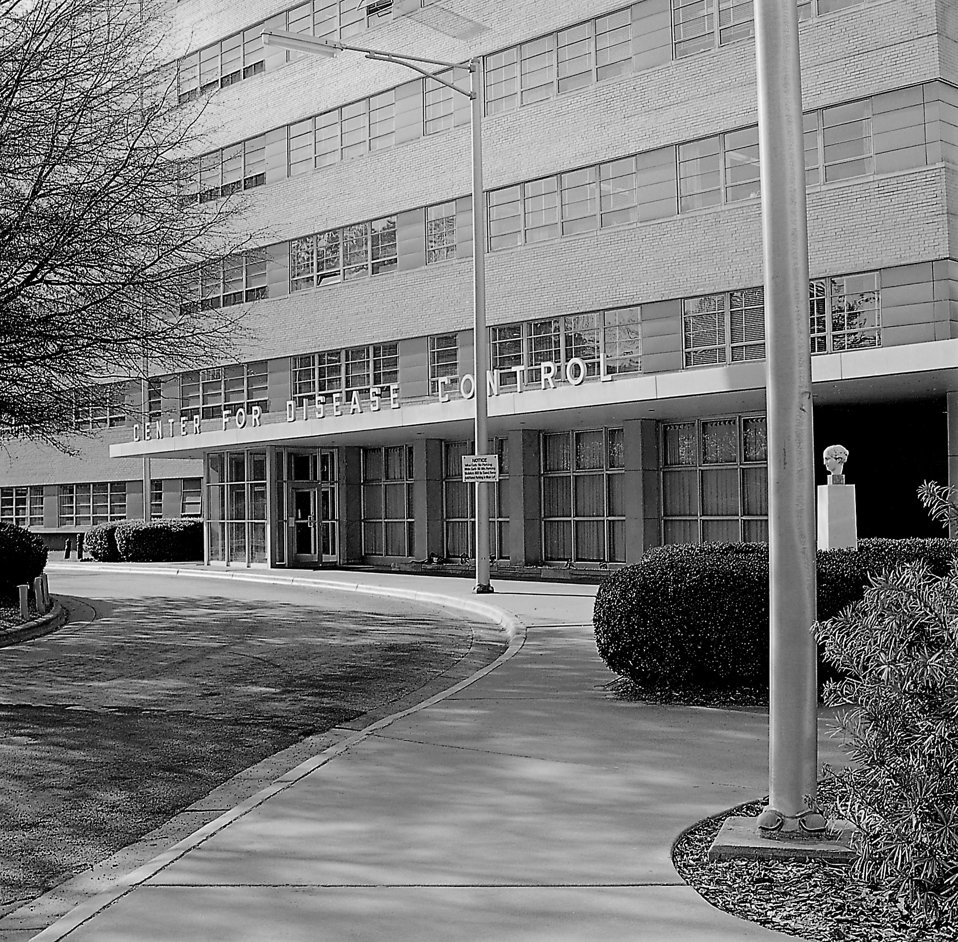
This 1978 photographed depicted what at the time was the 'new' entrance to the Centers for Disease Control's Clifton Road, Roybal Campus located in Atlanta, Georgia.